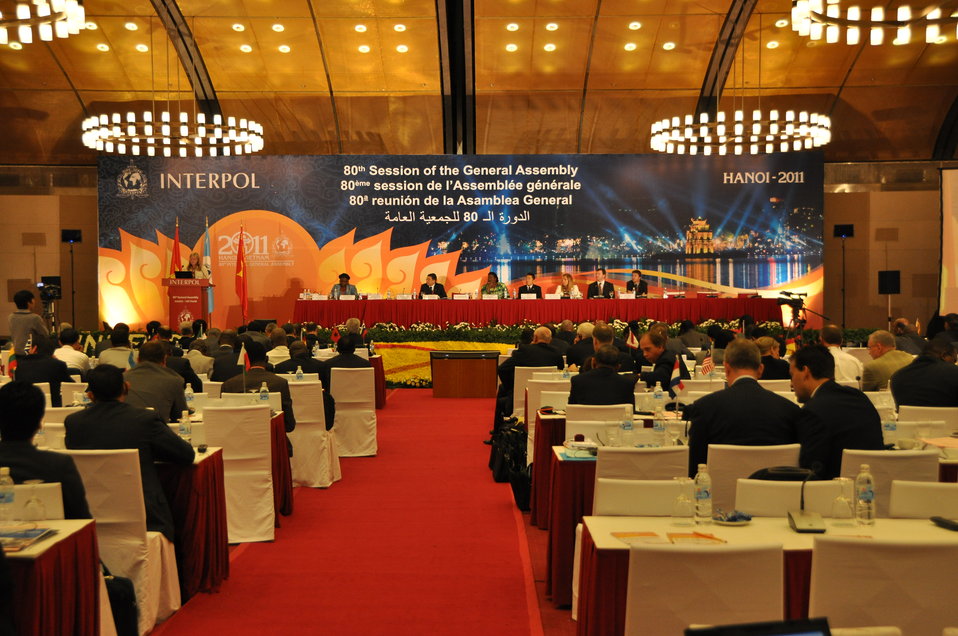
INTERPOL General Assembly in Hanoi, November 2011

Project Predator, an initiative to protect and save the world's last surviving wild tigers, was unveiled today at the 80th INTERPOL General Assembly, a gathering of global law enforcement support from the organization's 190 member countries.

Created by INTERPOL, Project Predator unites the efforts of police, customs and wildlife officials in the 13 countries in Asia where wild tigers can still be found. This new partnership under the Global Tiger Initiative brings together officials from the 13 tiger range countries, the U.S. Agency for International Development (USAID), the UK's Department for Environment, Food and Rural Affairs (Defra), the World Bank, the Smithsonian Institution and INTERPOL.